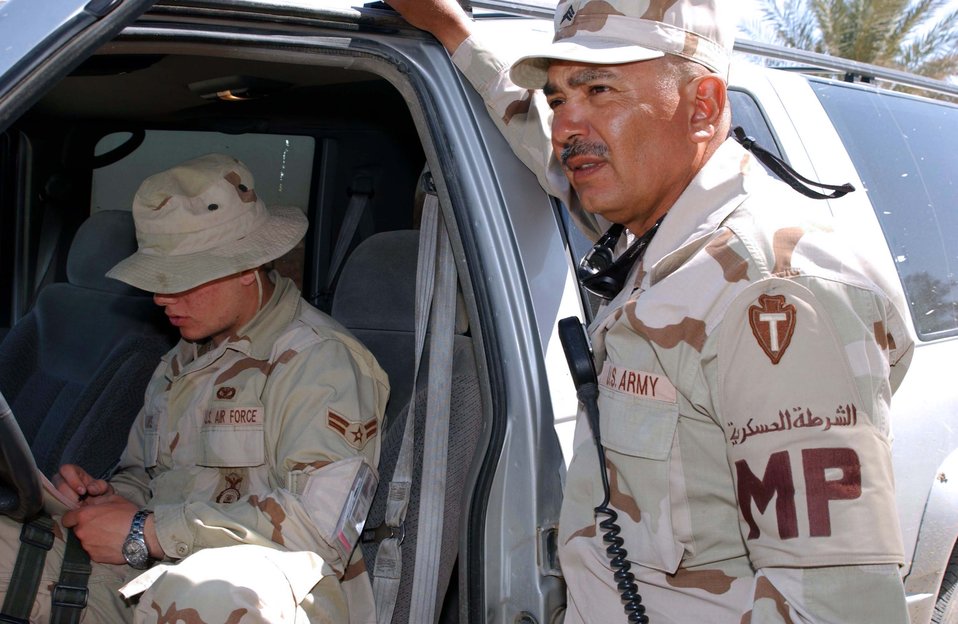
Tallil joint security force upholds law, order

TALLIL AIR BASE, Iraq -- Army Sgt. Jessie DeLarosa (right) provides a driver's information to Airman 1st Class Tom Bauhs as he writes a ticket for a traffic violation here. Sergeant DeLarosa is a military policeman with the Texas Army National Guard's 36th Infantry Division and is deployed from San Antonio. Airman Bauhs is assigned to the 407th Expeditionary Security Forces Squadron and is deployed from Keesler Air Force Base, Miss.